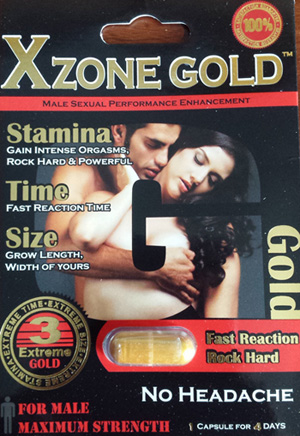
RECALLED – Dietary Supplement for Sexual Enhancement

January 9, 2014 – Product Recall – Midwest Wholesale Issues Voluntary Recall of Boost Ultra, XZone Gold, Sexy Monkey, Triple MiracleZen Platinum, Magic for Men, 'New' Extenze, and New XZen Platinum Marketed as a Dietary Supplements Due to the Presence of Undeclared Drug Ingredients. For additional information, please refer to the company issued press release available on FDA’s web site at www.fda.gov/Safety/Recalls/UCM381299.

And read this Consumer Update: Beware of Fraudulent ‘Dietary Supplements’